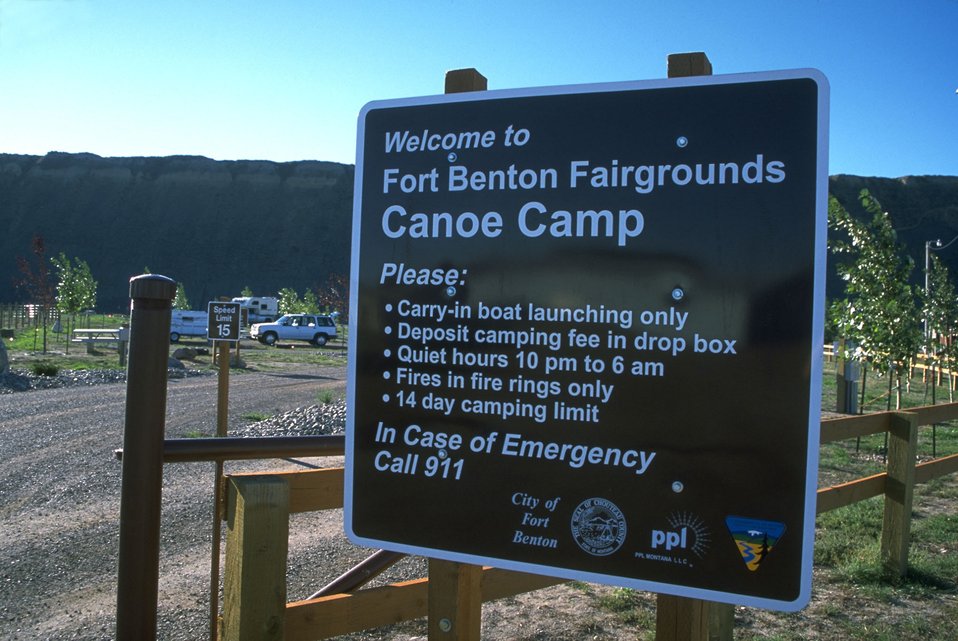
Canoe launch campgrounds at Fort Benton fairgrounds